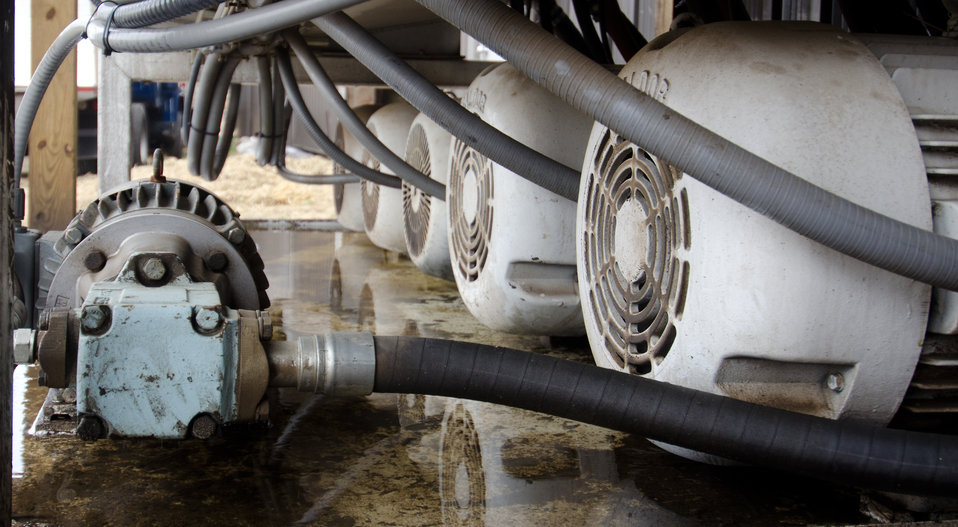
Electric motors replaced diesel engines at Heidel Hollow Farms, on Wednesday, April 20, 2011. A family owned farm since 1852 is a 1,800 acre operation in Germansville, PA. Led by David Fink, President of Heidel Hollow Farms, they mainly produce and compact hay for export and grow produce on 300 acres for local sale. With the financial help of the U.S. Department of Agriculture (USDA) an 896 panel solar array was recently installed on non farmable diversion ditches. Rated at 200 kilowatts, they project 240 megawatts of electricity to be produced each year, providing up to 70% of the farms electrical needs. Additionally, USDA financial assistance made it possible to replace the hay compactor’s diesel engines with clean low-maintenance, low operating cost electric motors to power the compactor's hydraulic system. The compactor increases the density of baled hay by two and half times for more efficient shipping to overseas customers.